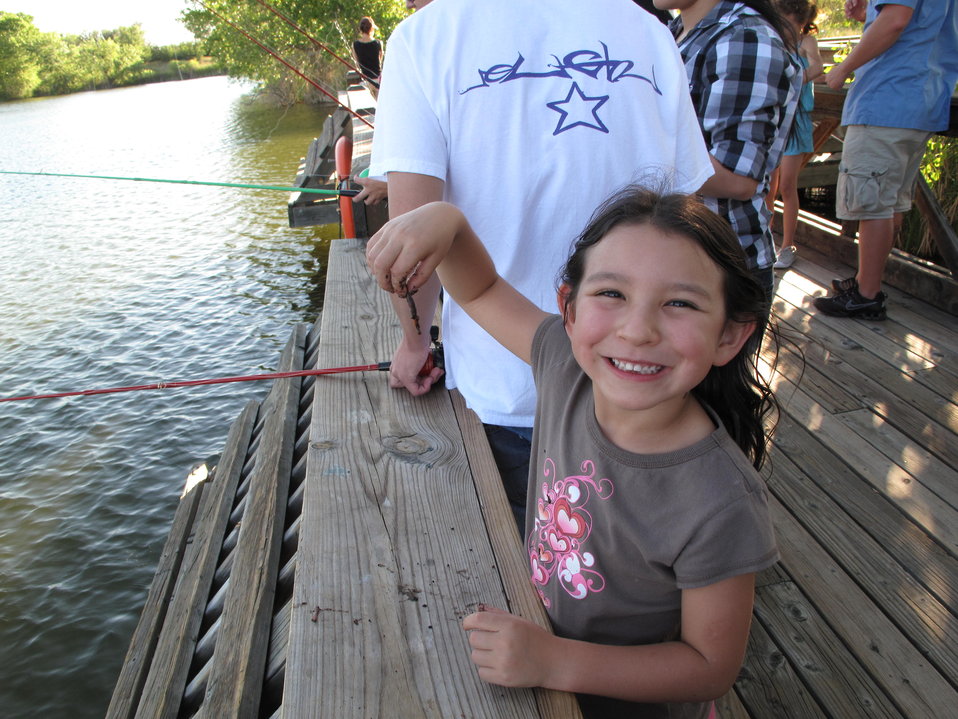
Enjoying Fishing